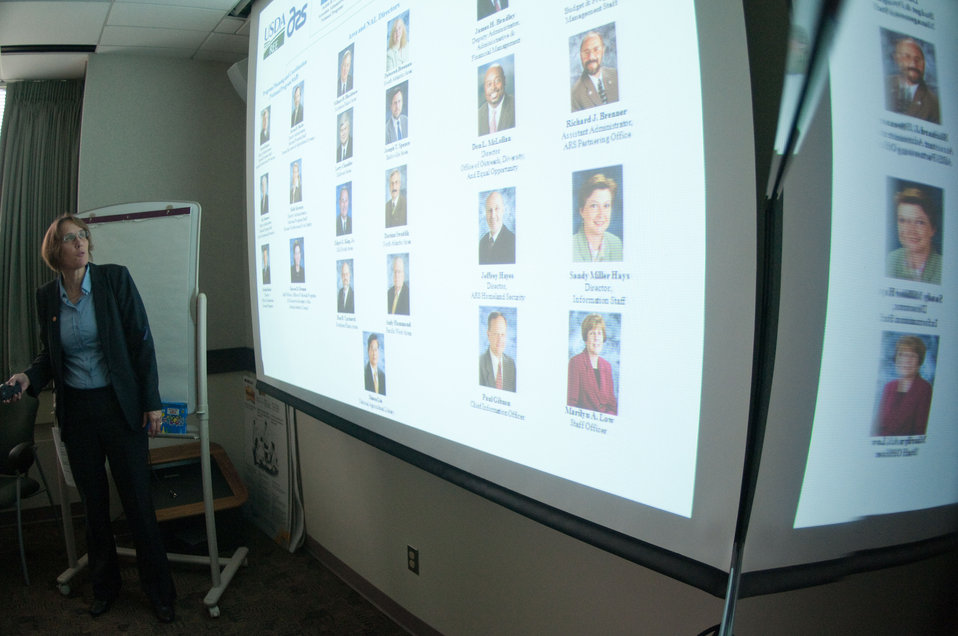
U.S. Department of Agriculture (USDA), Agriculture Research Service (ARS), International Research Program's Jennifer Woodward-Greene, spoke about the organization of USDA and ARS with the Afghan Ministry of Agriculture's Borlaug Fellows at the George Washington Carver Center, in Beltsville, MD on Wednesday Sept. 21, 2011.